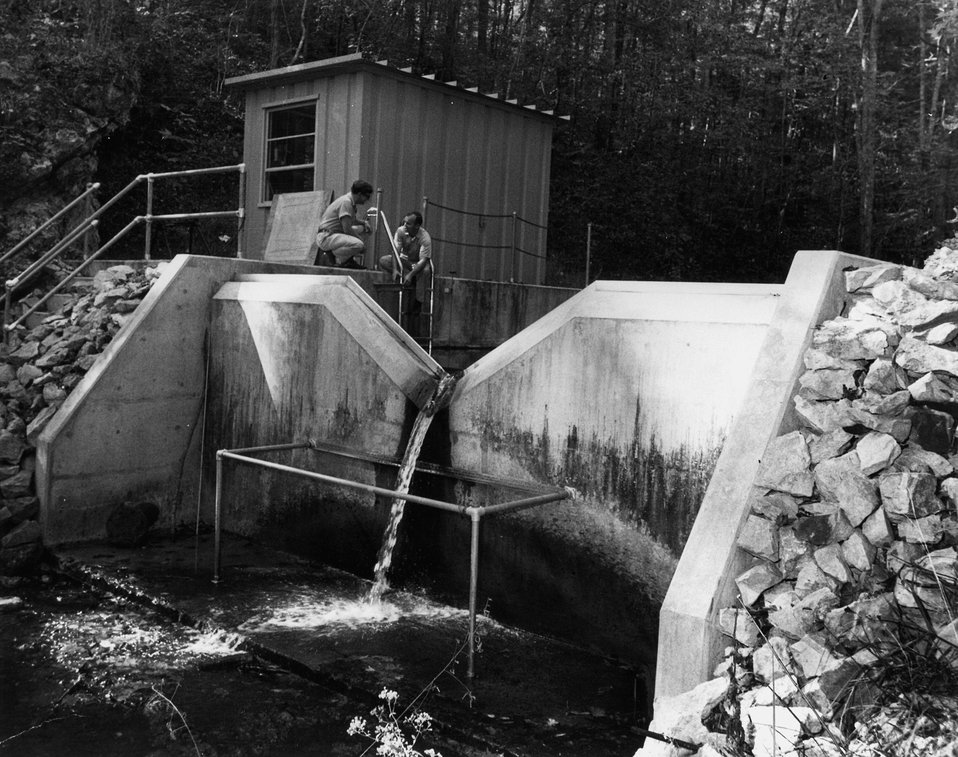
The movement of chemicals through the environment is under investigation in this forested area near the U.S. Atomic Energy Commission's Oak Ridge National Laboratory. c. 1972